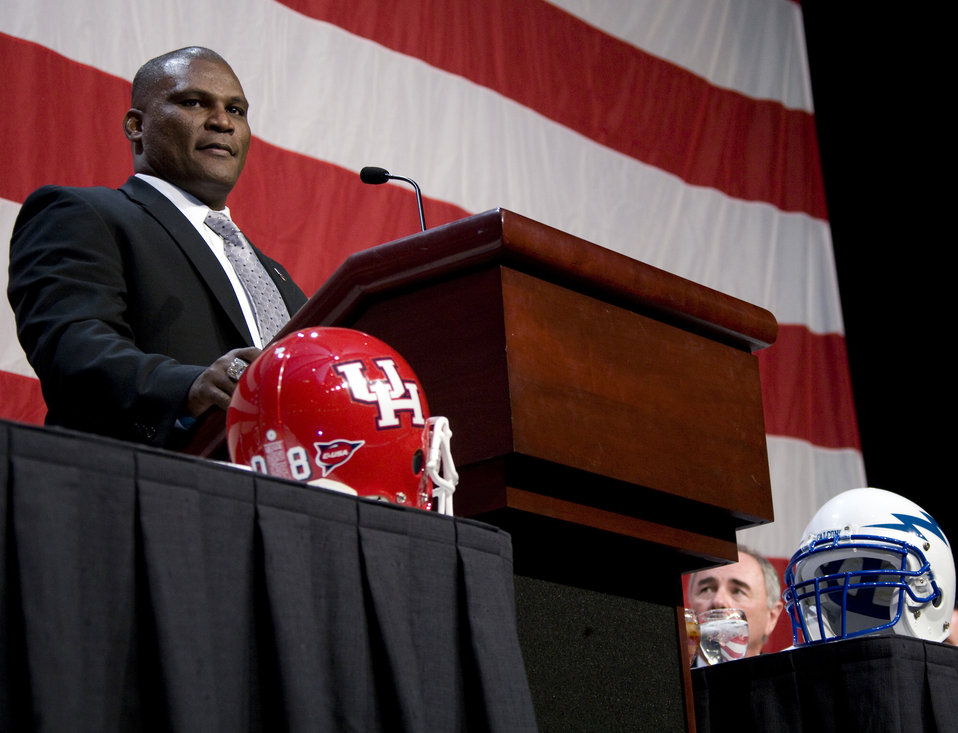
Armed Forces Bowl puts military might on display

Wounded in Iraq in May 2007, former Army Lt. Col. Greg Gadson speaks Dec. 30 during the Bell Helicopter Armed Forces Bowl luncheon. Colonel Gadson gave a motivational speech to the University of Houston Cougars and the U.S. Air Force Academy Falcons teams at the luncheon.